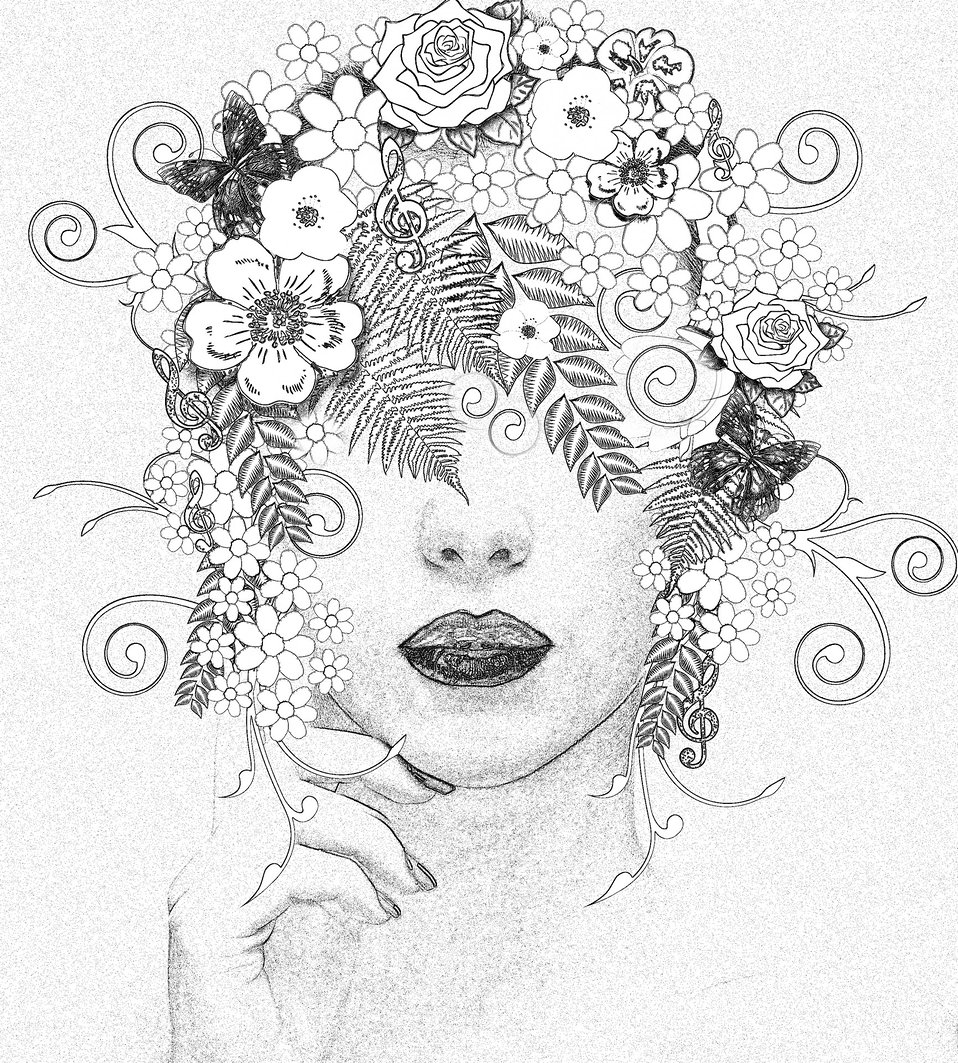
Background 798

Background pencil drawing.